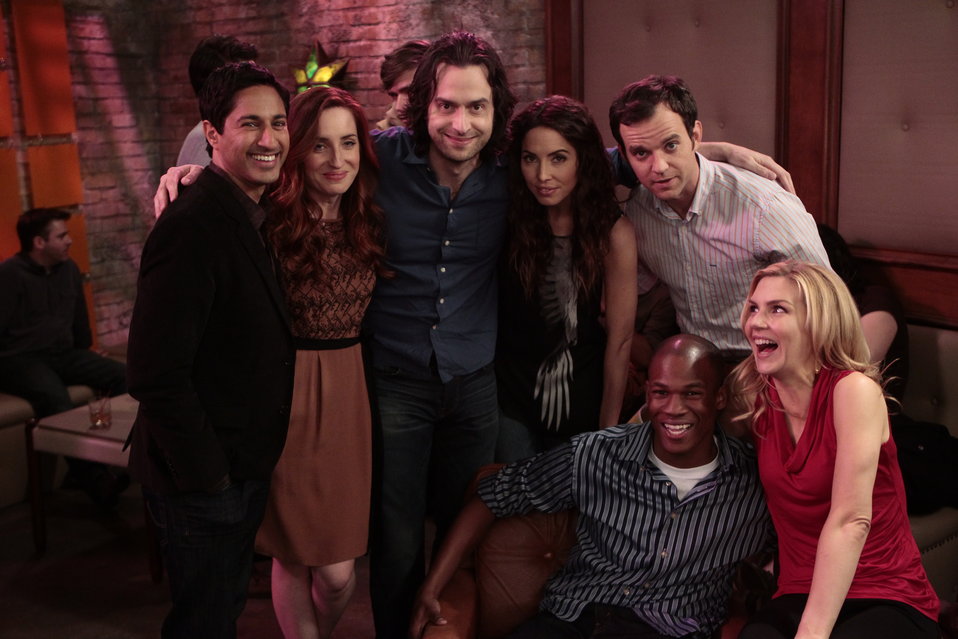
Vandenberg AFB Airman appears on sitcom

Airman 1st Class Marcus McGinnis hangs out on the set with